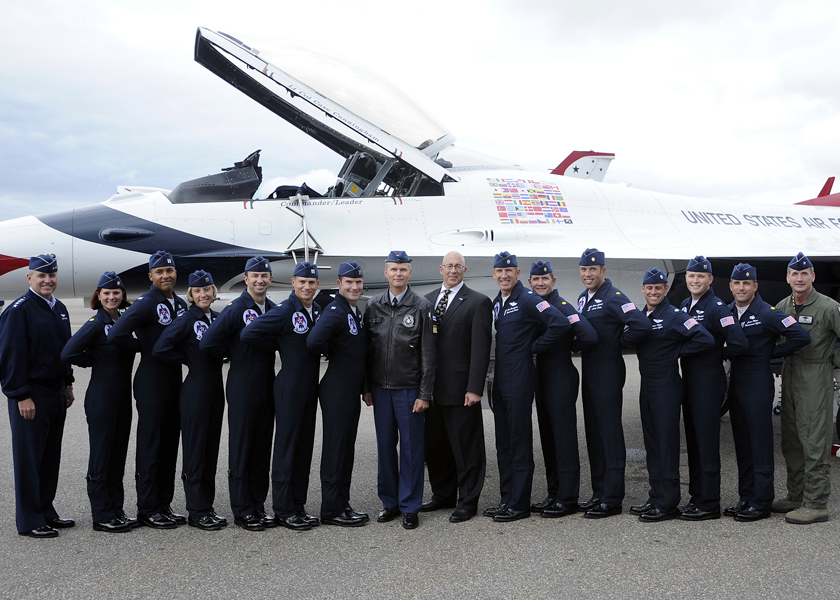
Thunderbirds in Finland

The U.S. Air Force Thunderbirds pose for a photograph with Bruce J. Oreck June 18, 2011, at Turku Air Base, Finland. The Thunderbird visit marks the first time in the team's 58-year history to fly in Finland. Mr. Oreck is the U.S. ambassador to Finland.